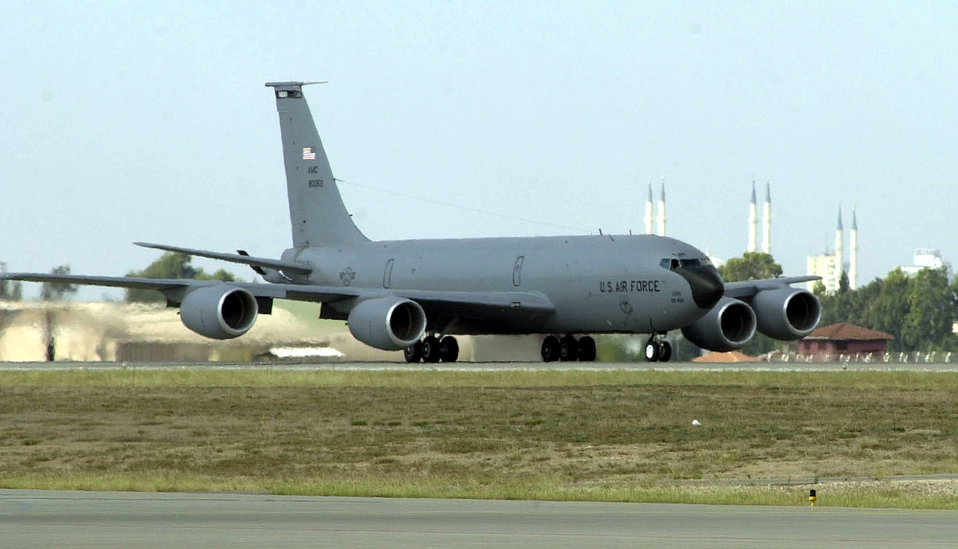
Tanker Taxi

OPERATION NORTHERN WATCH -- A KC-135R Stratotanker taxis down the runway at Incirlik Air Base, Turkey in preparation for take-off in support of Operation Northern Watch. One part of ONW is for coalition aircraft to enforce the northern no-fly zone in Iraq.